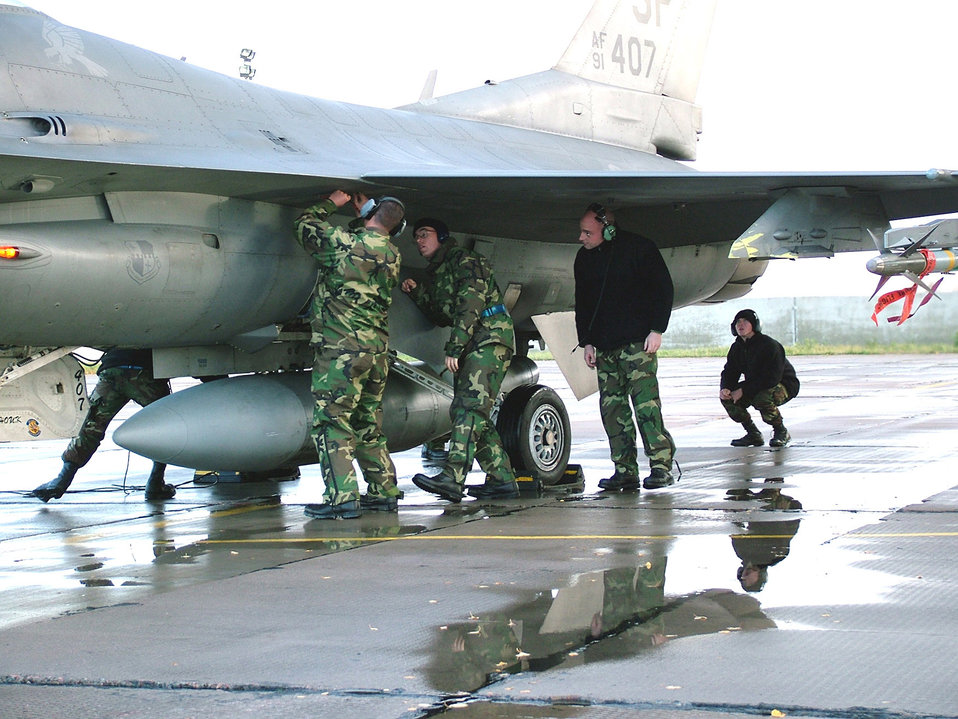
Sign of Success

SIALULIAI, Lithuania (AFPN) -- Crew chiefs tend to an F-16 Fighting Falcon flown by Capt. Joey Gaona after completing a training flight. The 23rd Expeditionary Fighter Squadron is participating in NATO's Baltic Air Policing mission, providing 24-hour security over the skies of Lithuania, Latvia and Estonia.